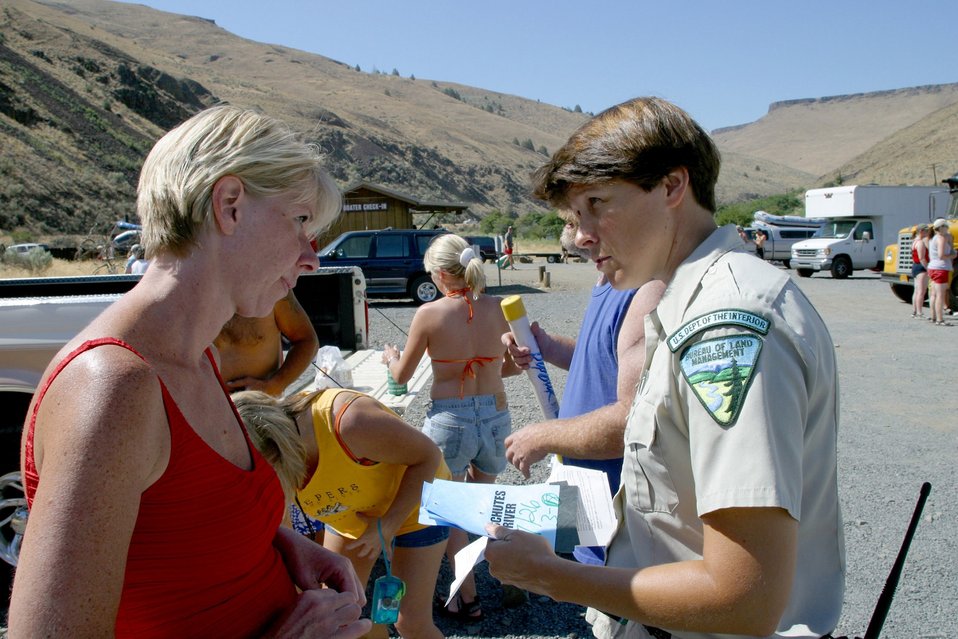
BLM River Rangers at Harphamp Flat check permits and issue boat tags while reminding users of current safety and fire regulations.